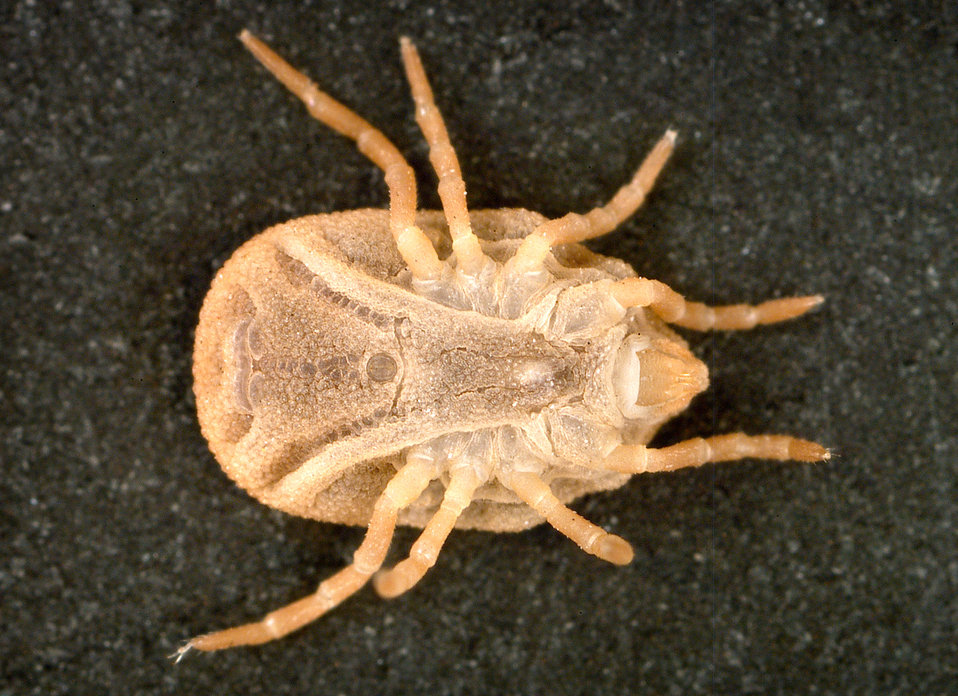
This is a ventral view of the 'soft tick' Carios kelleyi, formerly Ornithodoros kelleyi, or the 'Bat Tick'.